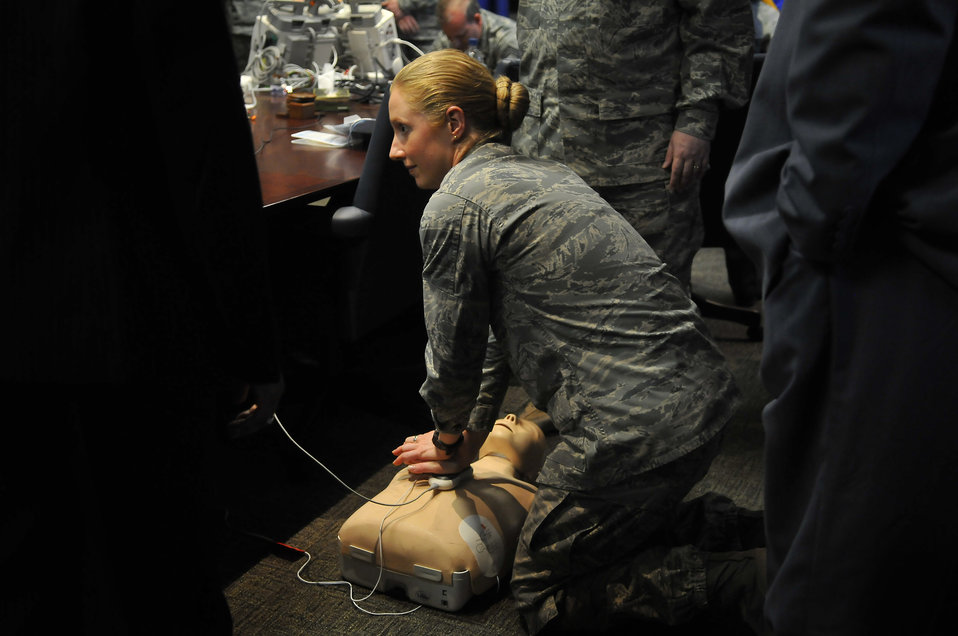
Practice makes perfect

Capt. Sarah Carpenter practices using an automated external defibrillator at Malcolm Grow Medical Center March 18 at Andrews Air Force Base, Md. Every employee in the center is required to be trained on the new system. She is a medical law consultant with the 79th Medical Wing.